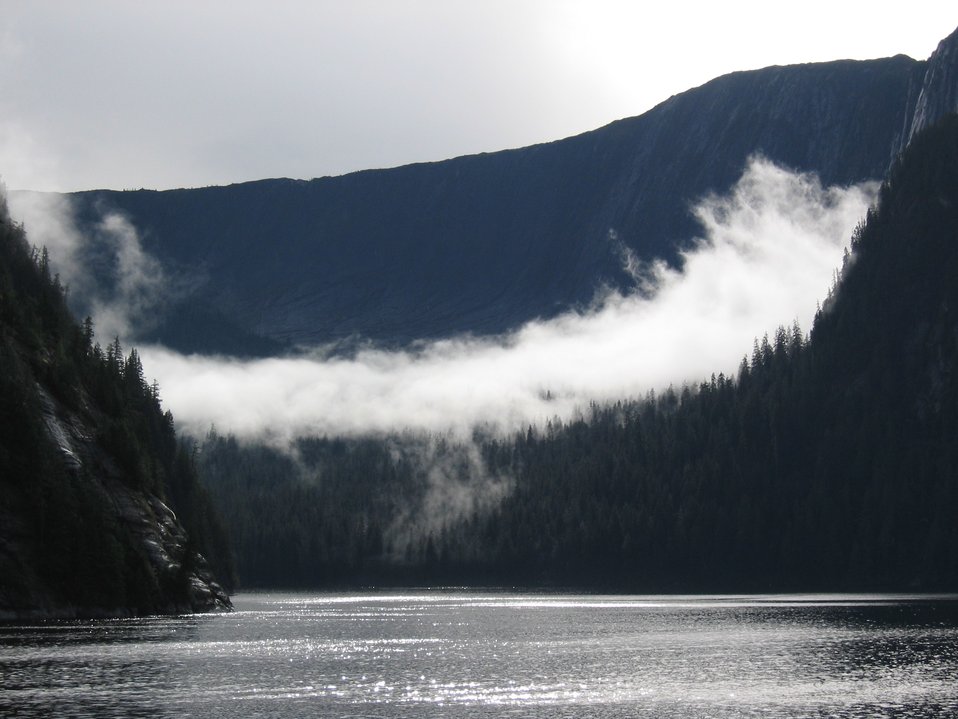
A ribbon of cloud draped across a glacial valley in the Rudyerd Bay area while sunlight sparkles on the water.